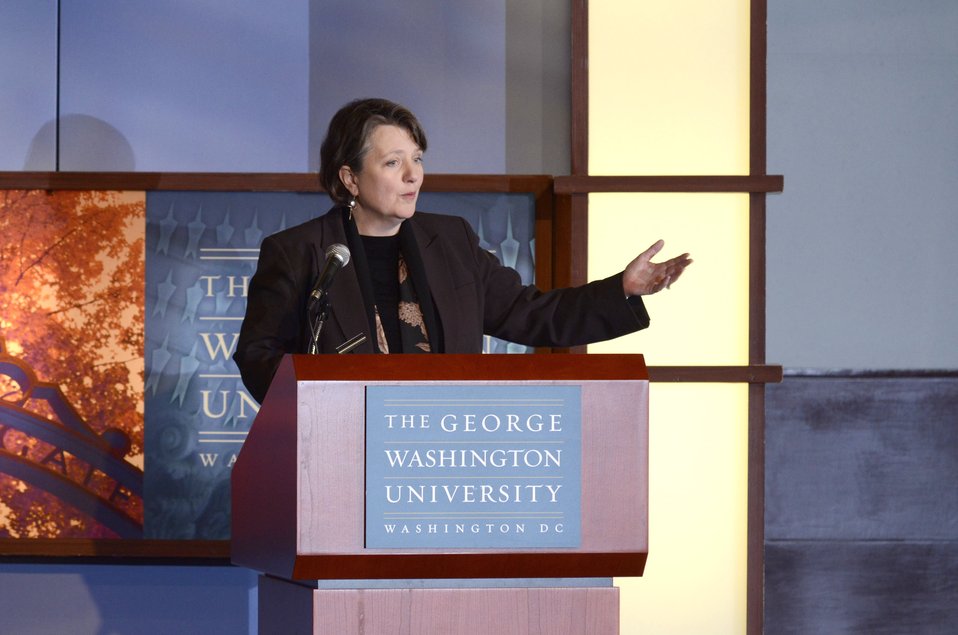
Agriculture Deputy Secretary Dr. Kathleen Merrigan keynote speaker 'Shaping the Farm Bill for a Sustainable Future.' Forum at the Trachtenberg School of Public Policy and Public Administration, George Washington University in Washington, D.C., on Thursday, March 1, 2012.